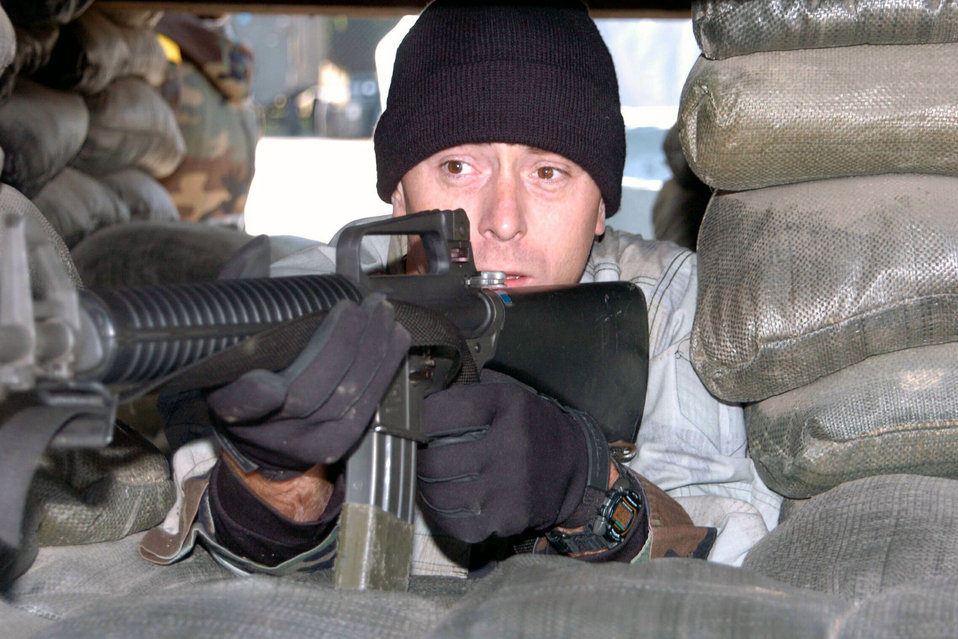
In the bunker

OSAN AIR BASE, South Korea -- Staff Sgt. Erik Guillory secures a position in a bunker for a simulated attack during an exercise here recently. Sergeant Guillory is assigned to the 51st Maintenance Squadron.